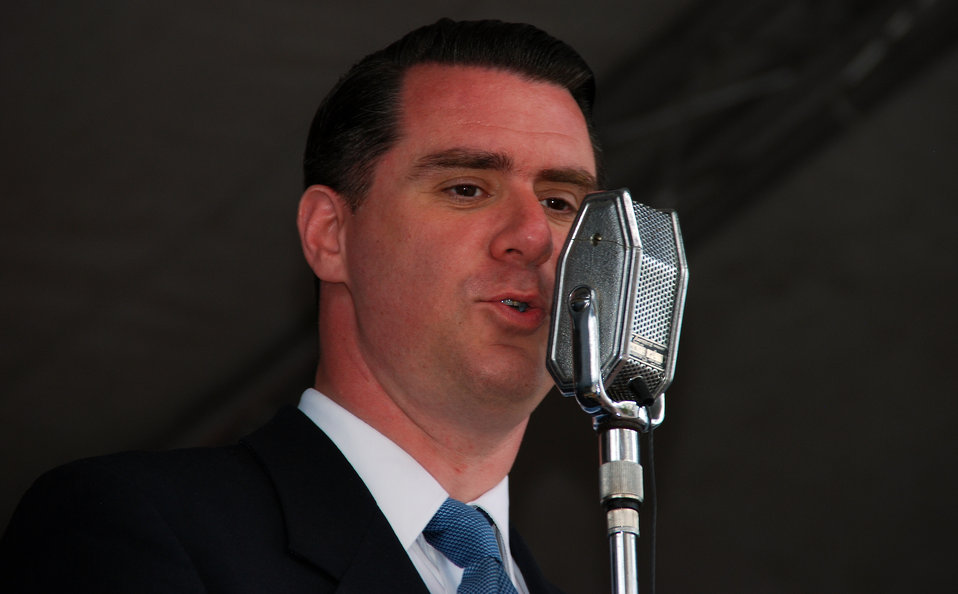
Andrej Hermlin, Deutscher Pianist und Bandleader